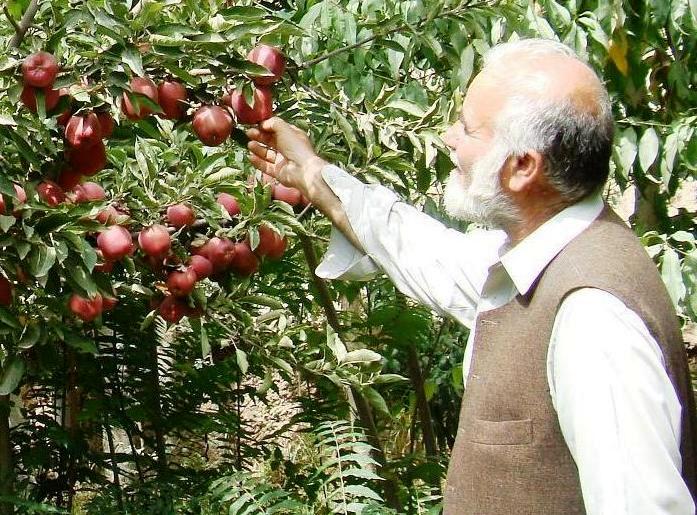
apples